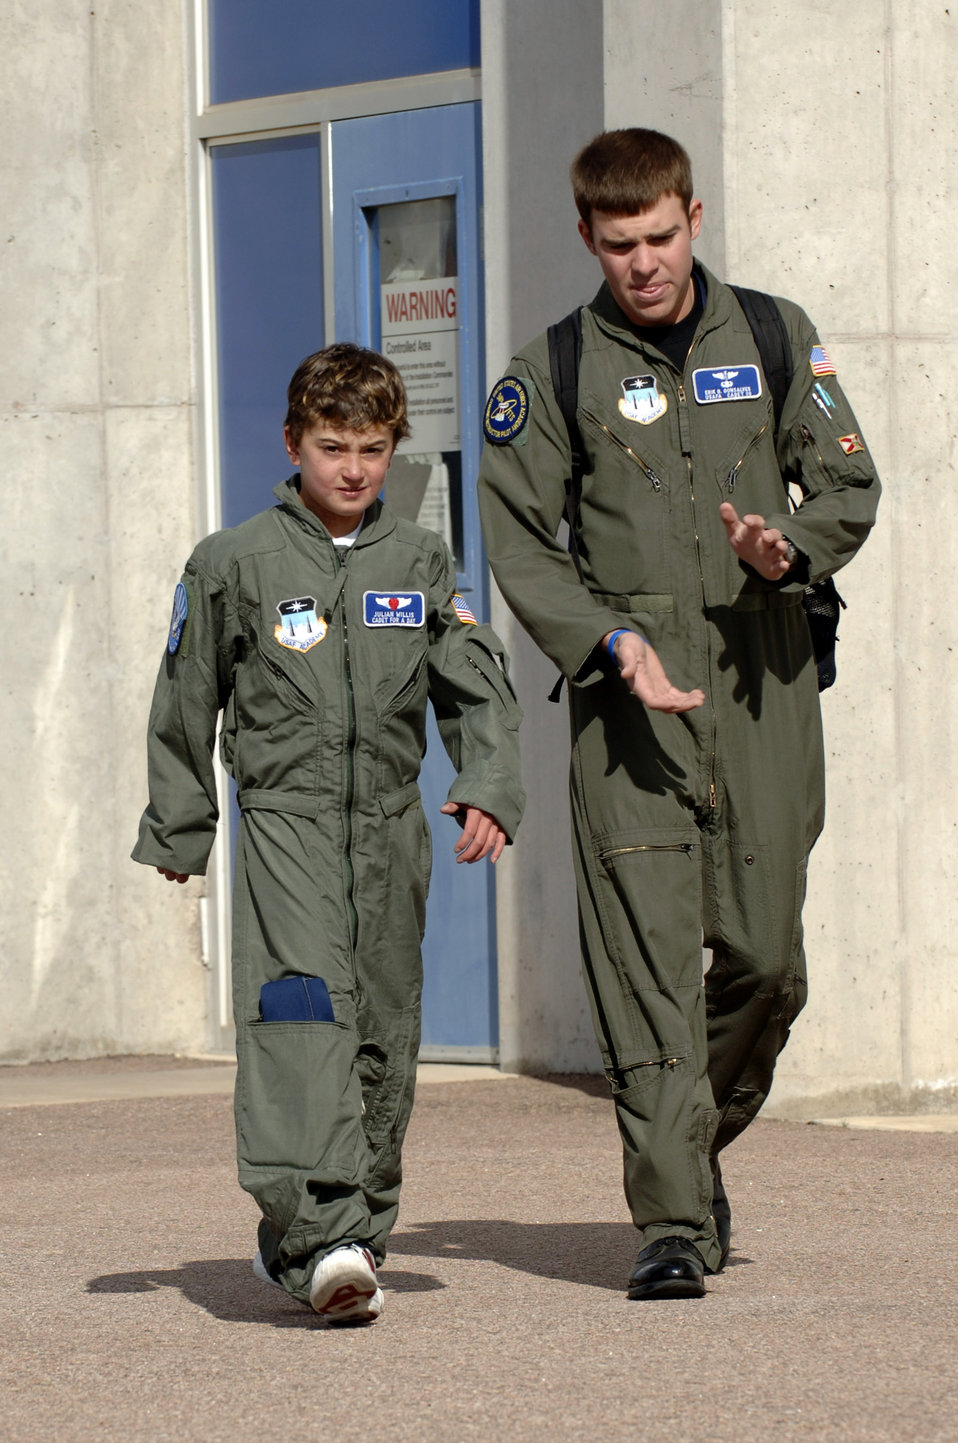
Academy honors 'Cadet for a Day' in Colorado

Ten-year-old Julian Willis walks with sophomore cadet Erik Gonsalves after taking a tour of the glider hangar at the U.S. Air Force Academy, Colo. The Make-a-Wish Foundation and the Air Force Academy made Julian a